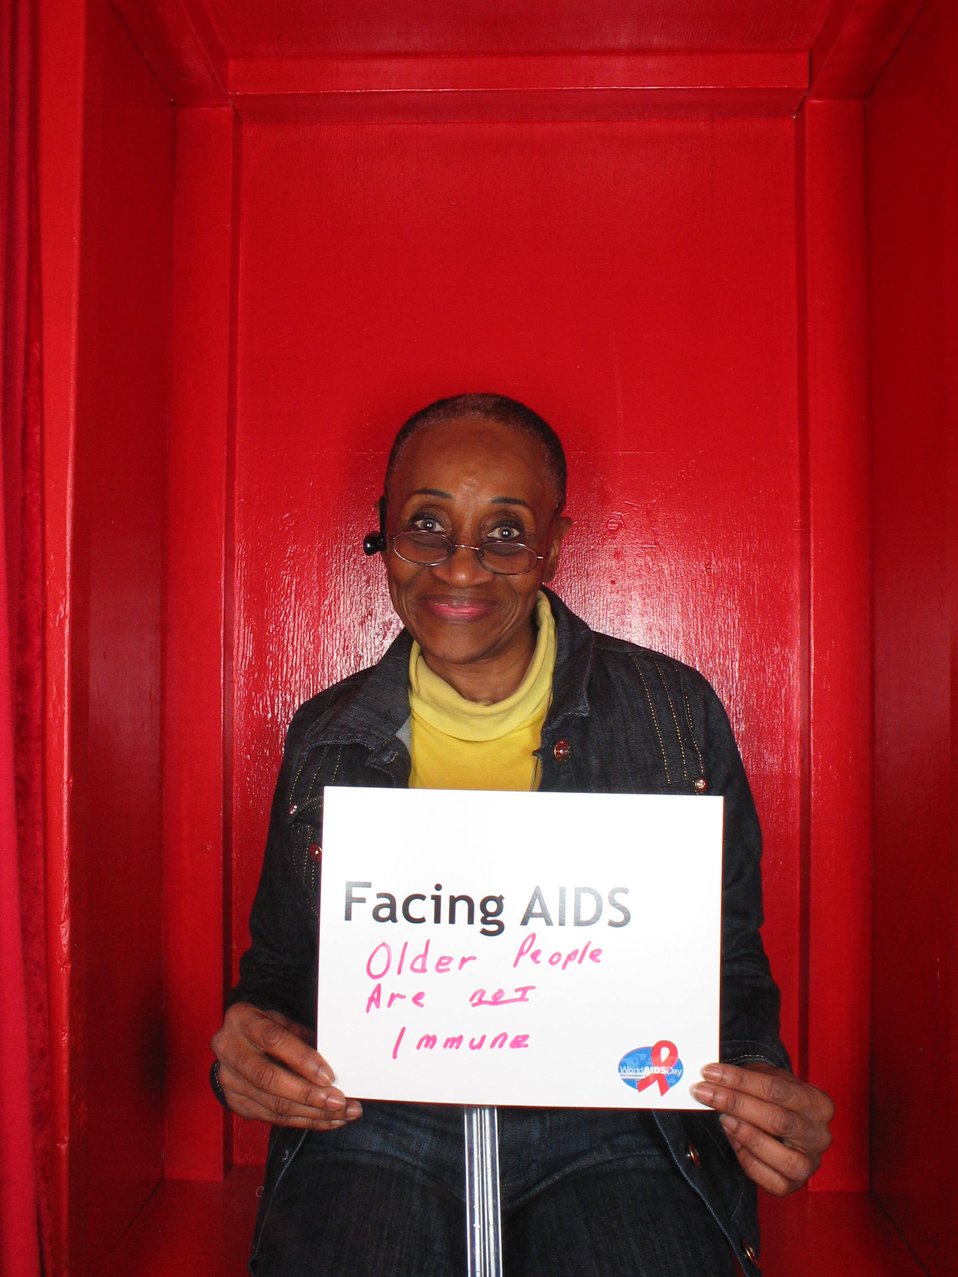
Facing AIDS older people are not immune